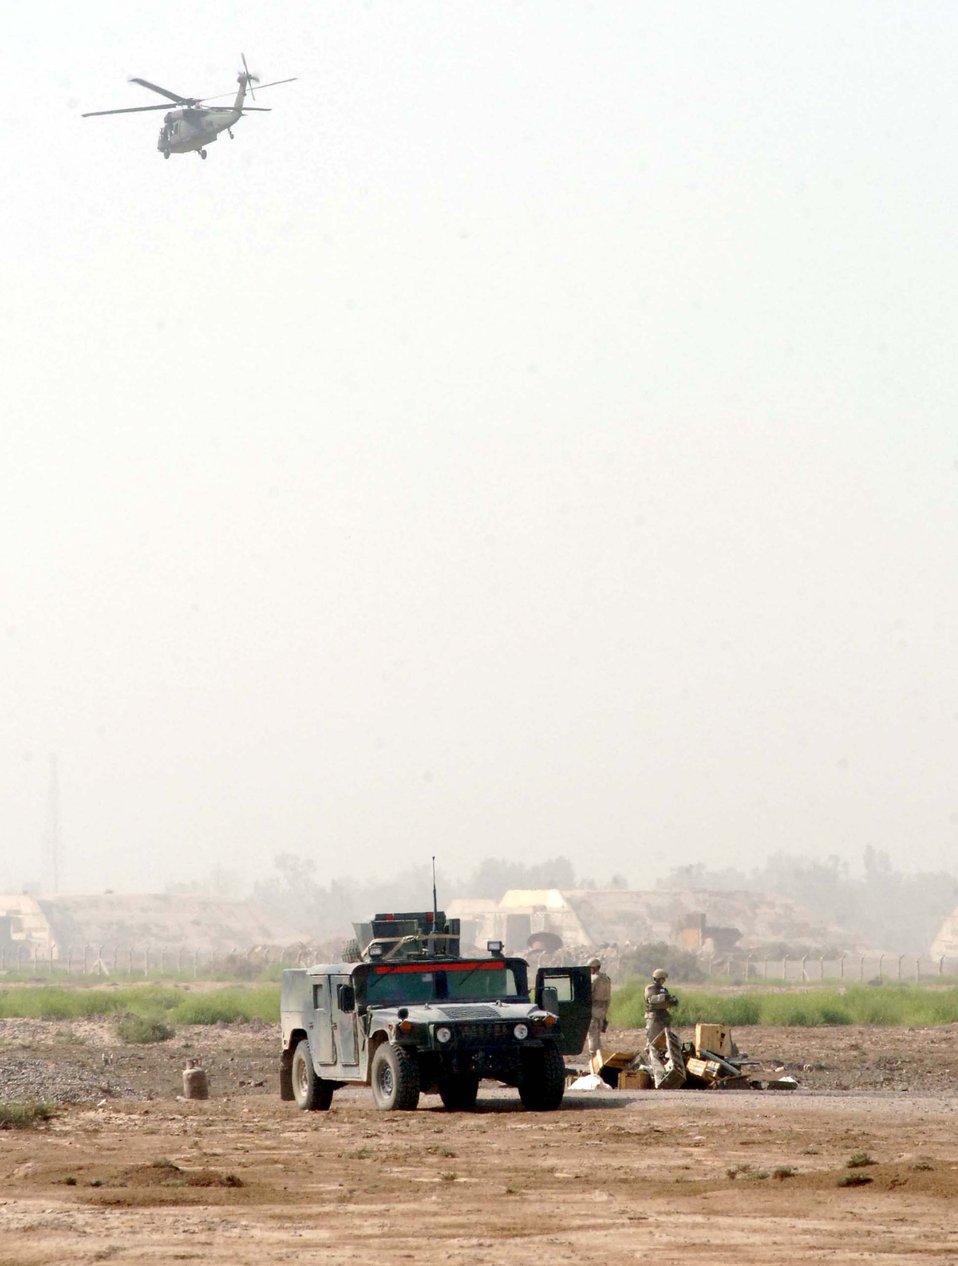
Baghdad boom

As an Army UH-60 Black Hawk lands at Baghdad International Airport, Iraq, two explosive ordnance disposal technicians